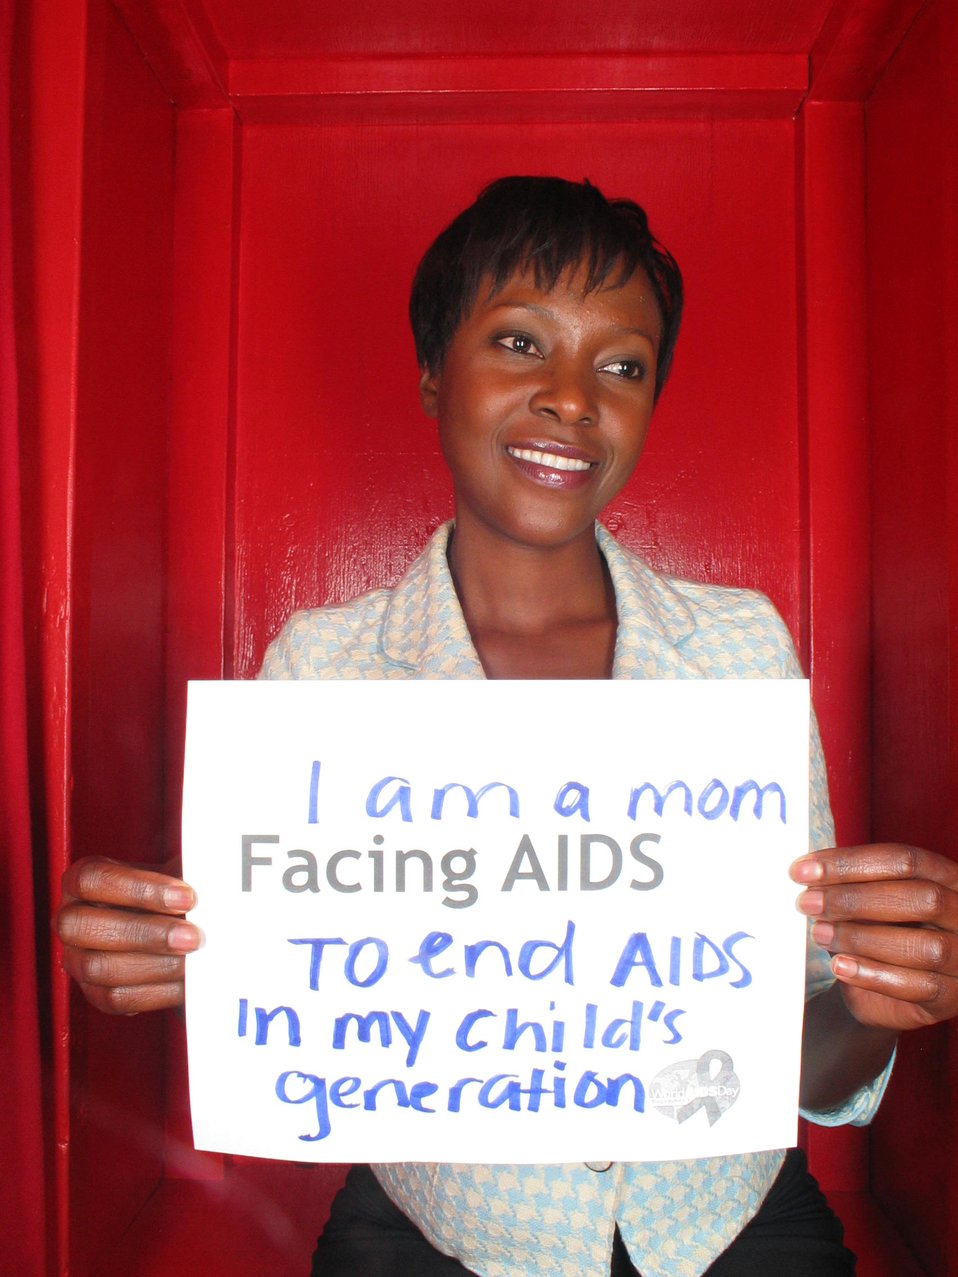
I am a mom Facing AIDS to end AIDS in my child's generation.